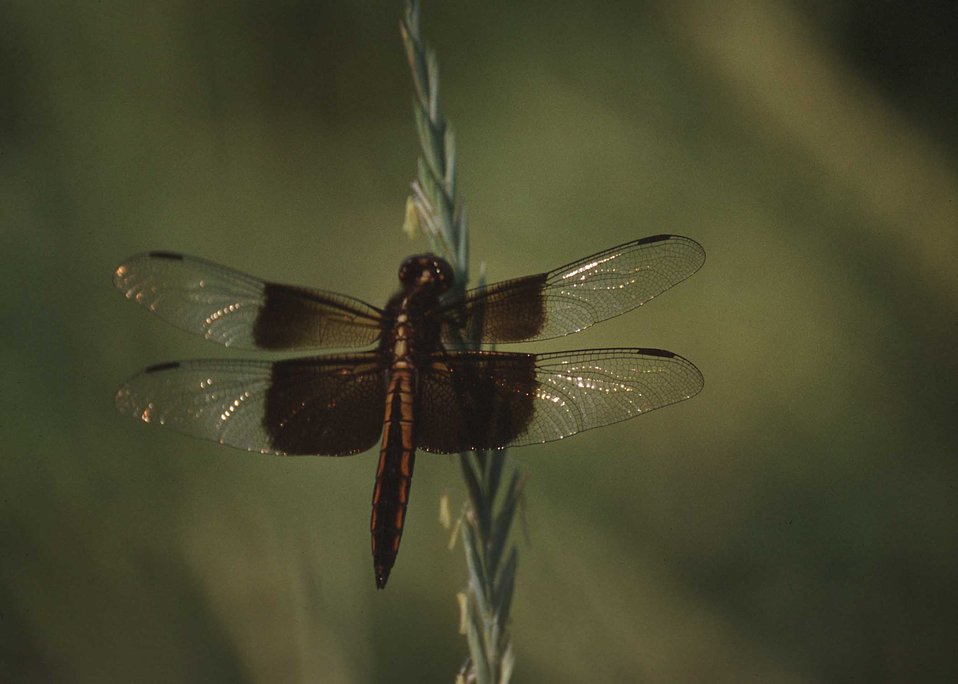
Widow dragonfly on a grass seedhead.